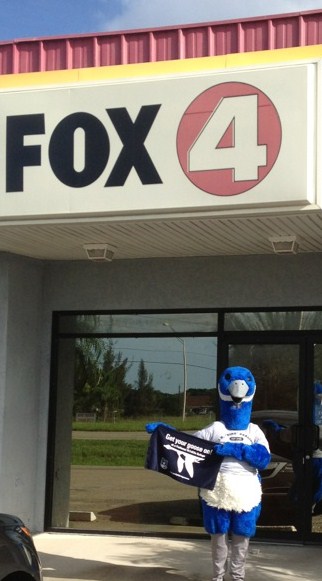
Get Your Goose On!